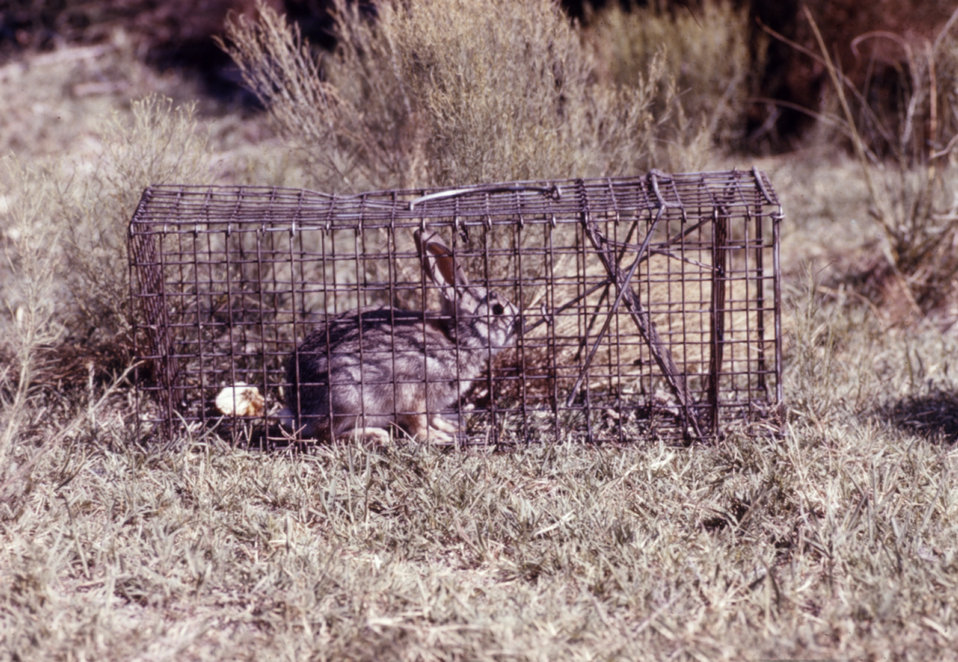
This rabbit was caught in a National Trap�, and was later tested during an arbovirus study.